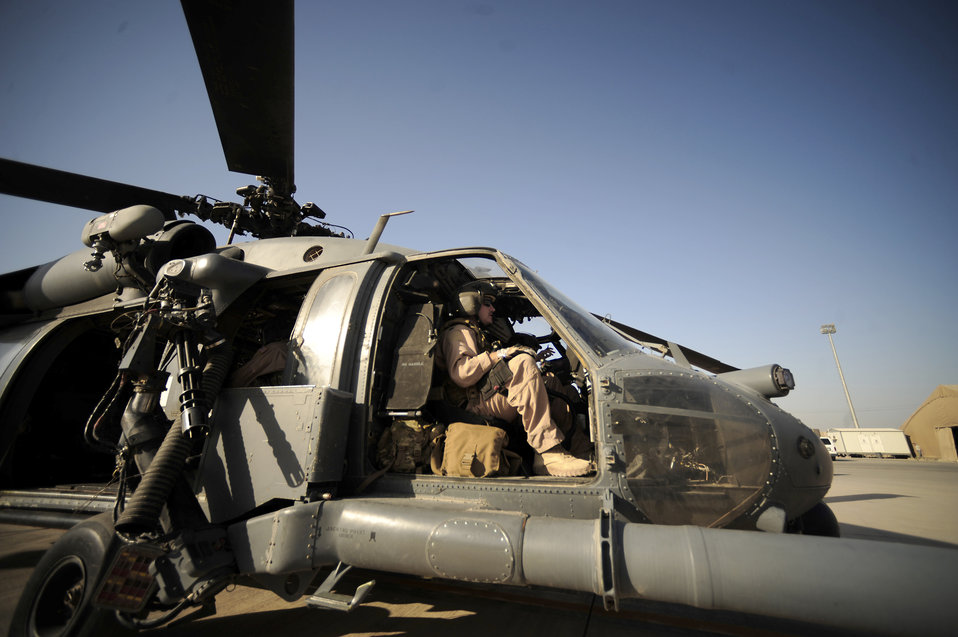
Pave Hawk mission over Iraq

Capt. Jay Humphrey runs through pre-flight checklist with crew before a mission July 12, 2010, at Joint Base Balad, Iraq. Captain Humphrey is an HH-60G Pave Hawk pilot assigned to the 64th Expeditionary Rescue Squadron.